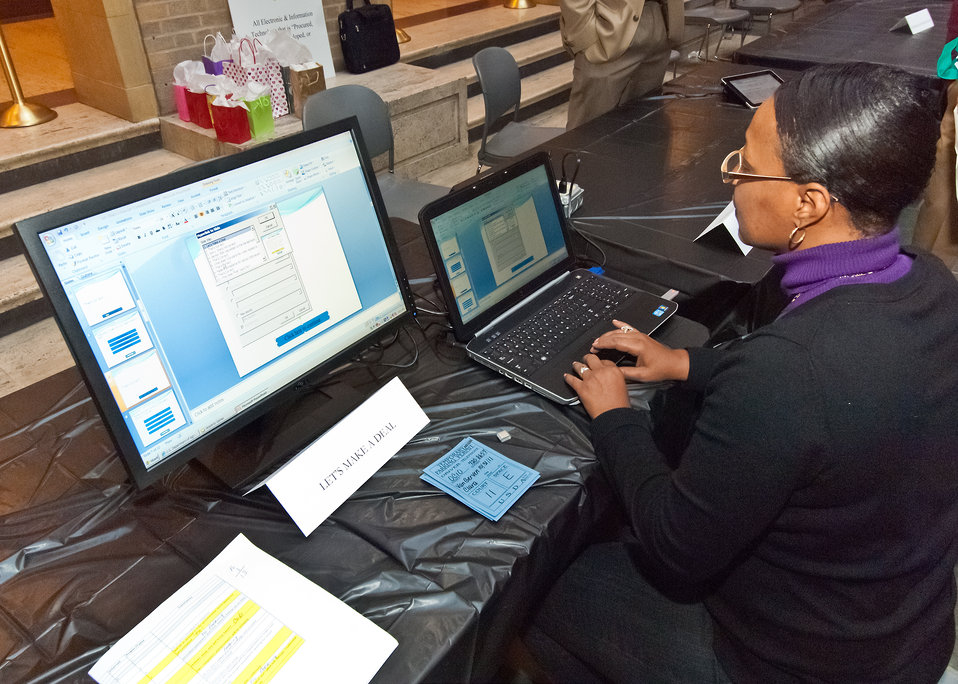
Section 508 Officer Anglea Williams plays, “Let’s Make A Deal” with information technology software and hardware at the U. S. Department of Agriculture (USDA) Section 508 and Disability Awareness Program in Washington, DC, on Monday, Oct. 31, 2011. Sponsored by the Office of the Chief Information Officer, the theme of the event was, “Turning the Key to Unlock and Eliminate Barriers by Providing Accessibility to All.” Section 508 applies to the development, procurement, maintenance or use of electronic and information technology allowing accessibility and awareness to promote inclusiveness to employees and the public with disabilities to information technology managed by the Federal government. Section 508 is part of the USDA’s Cultural Transformation Initiative to hire more employees with disabilities.